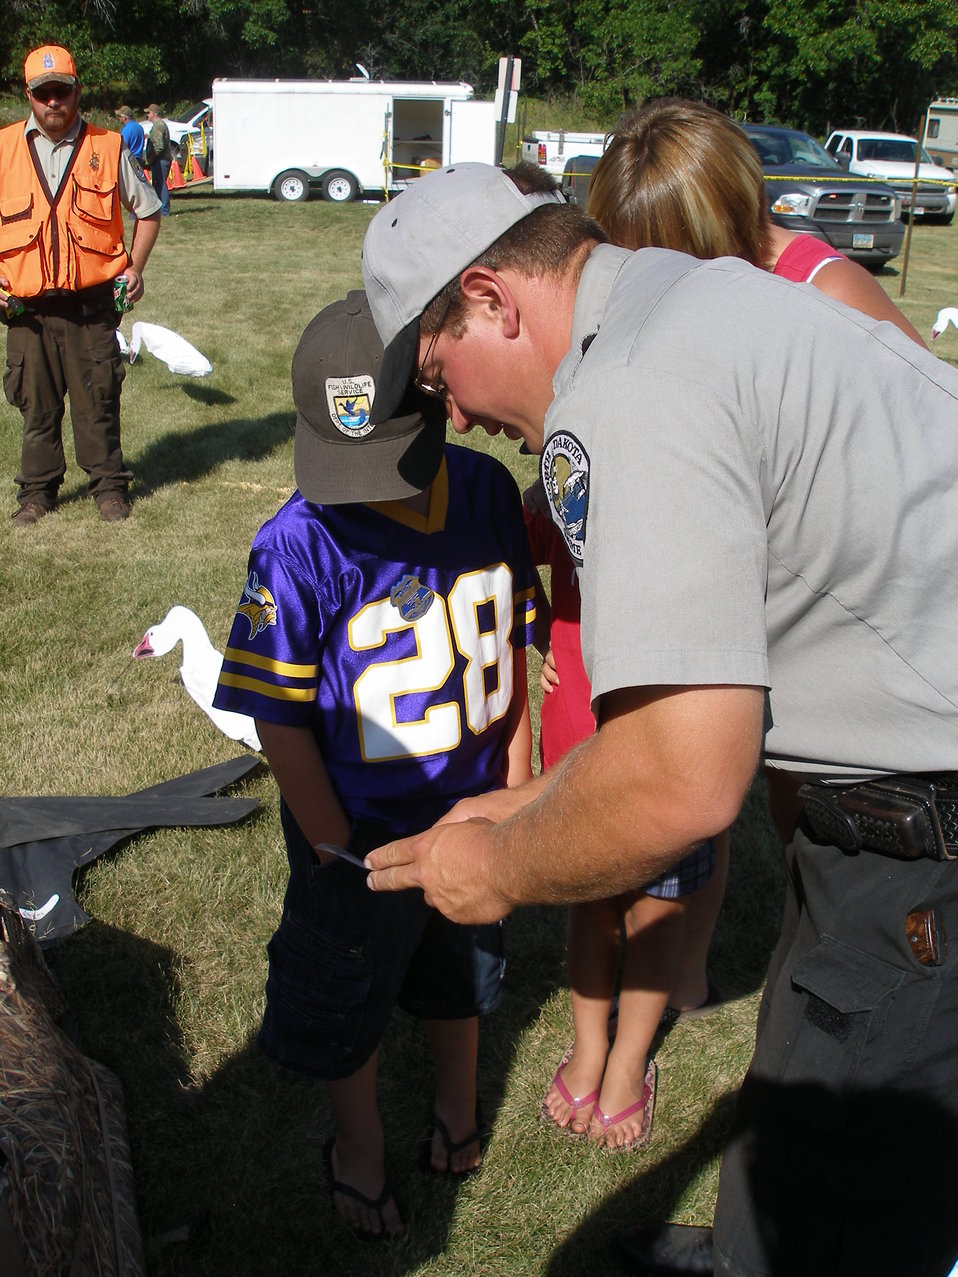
2011 Greenwing Day - Game Warden scenario session

Des Lacs National Wildlife Refuge, Tasker's Coulee

North Dakota Game & Fish Department Game Warden, Jim Burud instructing youth how to read hunting licenses.